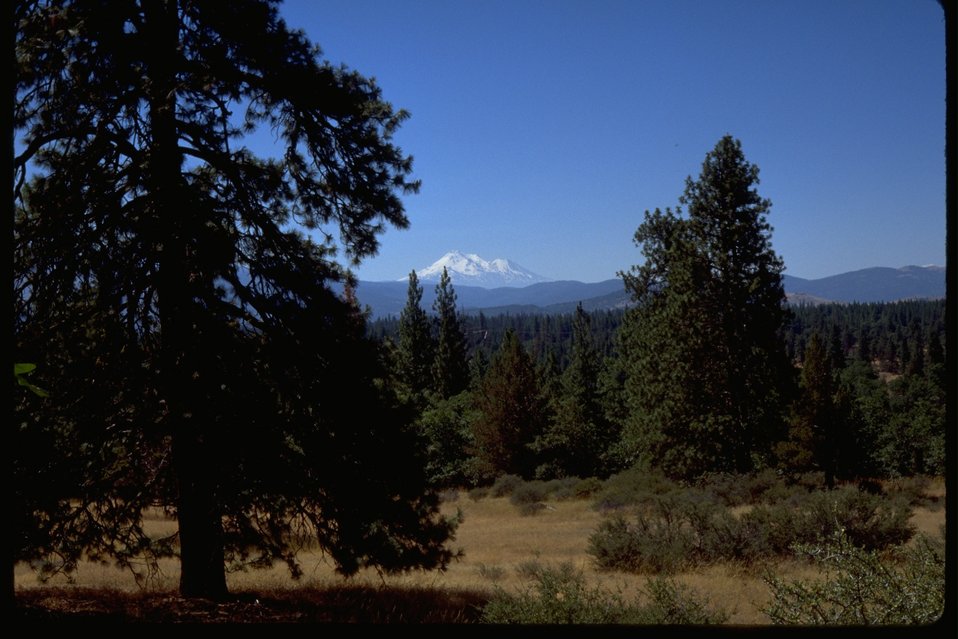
Agate Flats.